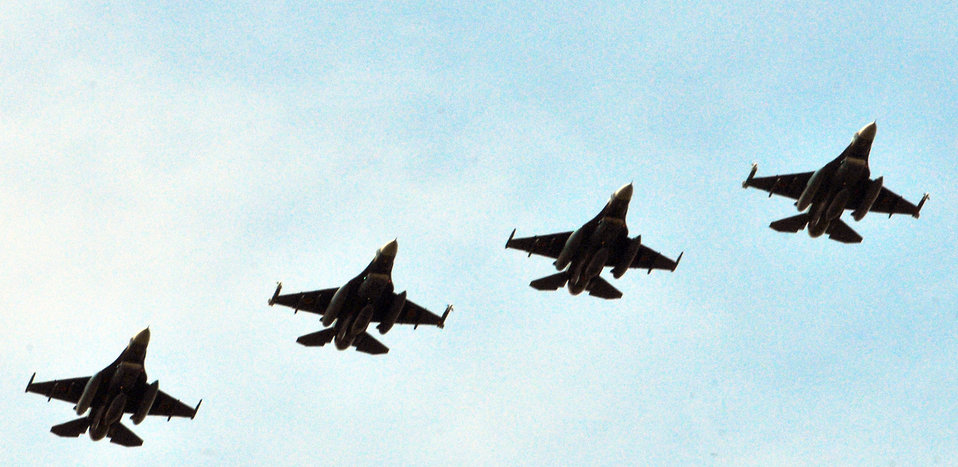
Aircraft arrive at Andersen for Cope North 10-1 kickoff

Four Japan Air Self Defense Force F-2s prepare to land to participate in the two-week Cope North exercise Feb. 5, 2010, at Andersen Air Force Base, Guam. The Japanese F-2 single-engine fighter has performance capabilities roughly comparable to those of the F-16 Fighting Falcon.